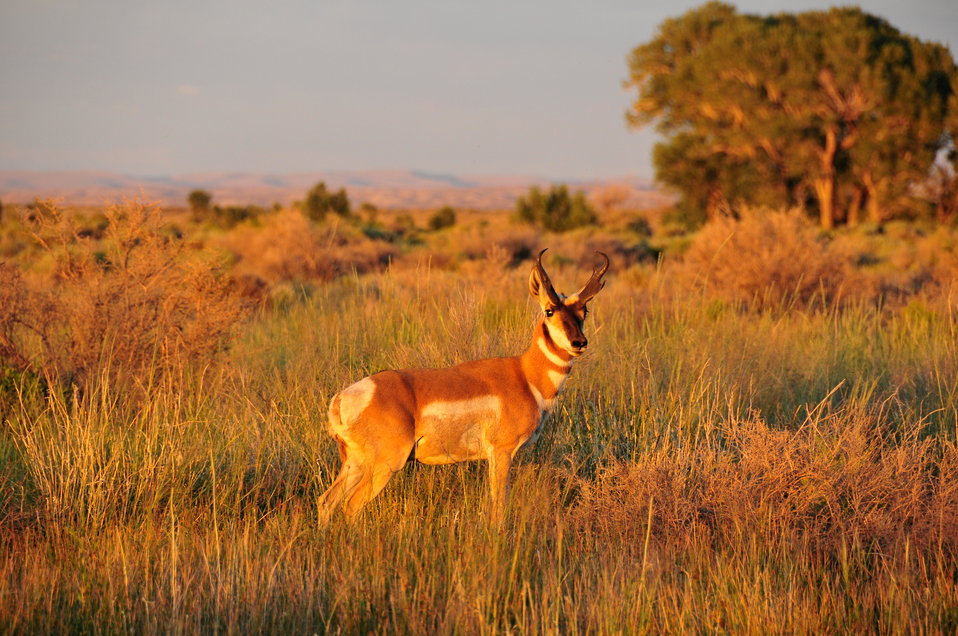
Pronghorn buckSeedskadee NWR 2